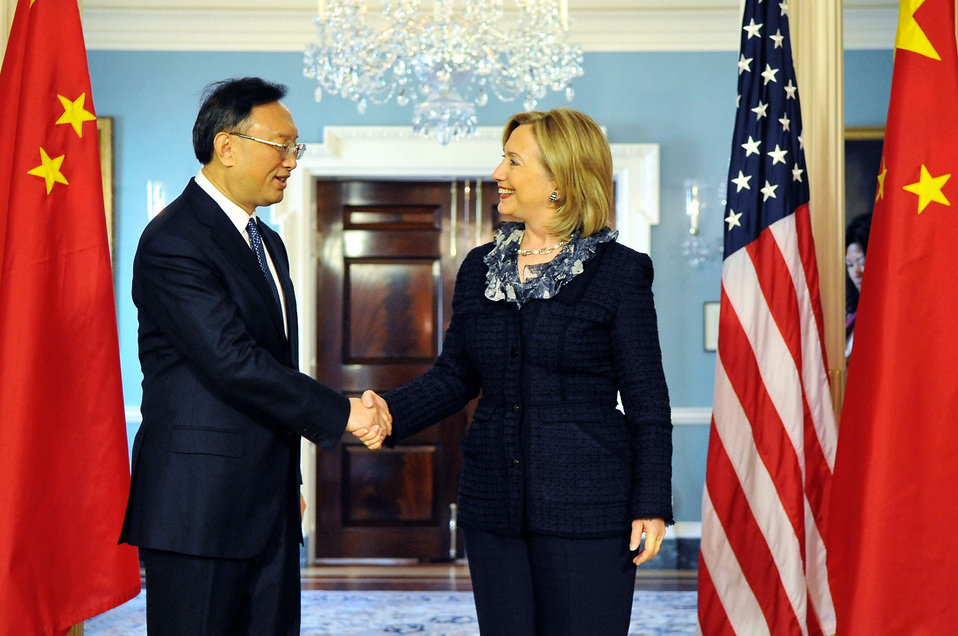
Secretary Clinton Shakes Hands With Chinese Foreign Minister Yang

U.S. Secretary of State Hillary Rodham Clinton, right, shakes hands with Chinese Foreign Minister Yang at the U.S. Department of State in Washington, D.C., on January 5, 2010.